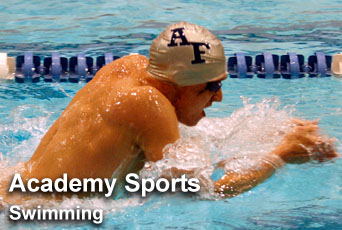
Academy sports: Swimming

For up-to-date scores on all U.S. Air Force Academy sports, visit their Web site at www.goairforcefalcons.com.